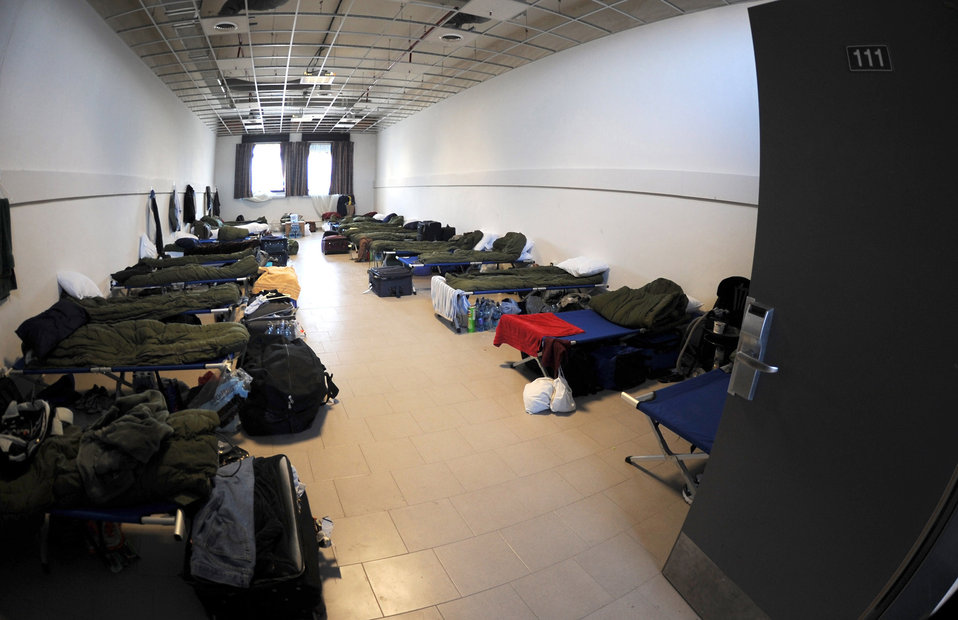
Odyessey Dawn

A temporary lodging room houses personnel arriving at Aviano Air Base, Italy, in support of Operation Odyssey Dawn March 20. Joint Task Force Odyssey Dawn is the U.S. Africa Command task force established to support the larger international response to the unrest in Libya. A broad coalition of nations are partnering to enforce U.N. Security Council Resolution (UNSCR) 1973, which authorizes all necessary means to protect civilians in Libya under threat of attack by Qadhafi regime forces. JTF Odyssey Dawn is commanded by Admiral Samuel J. Locklear, III.